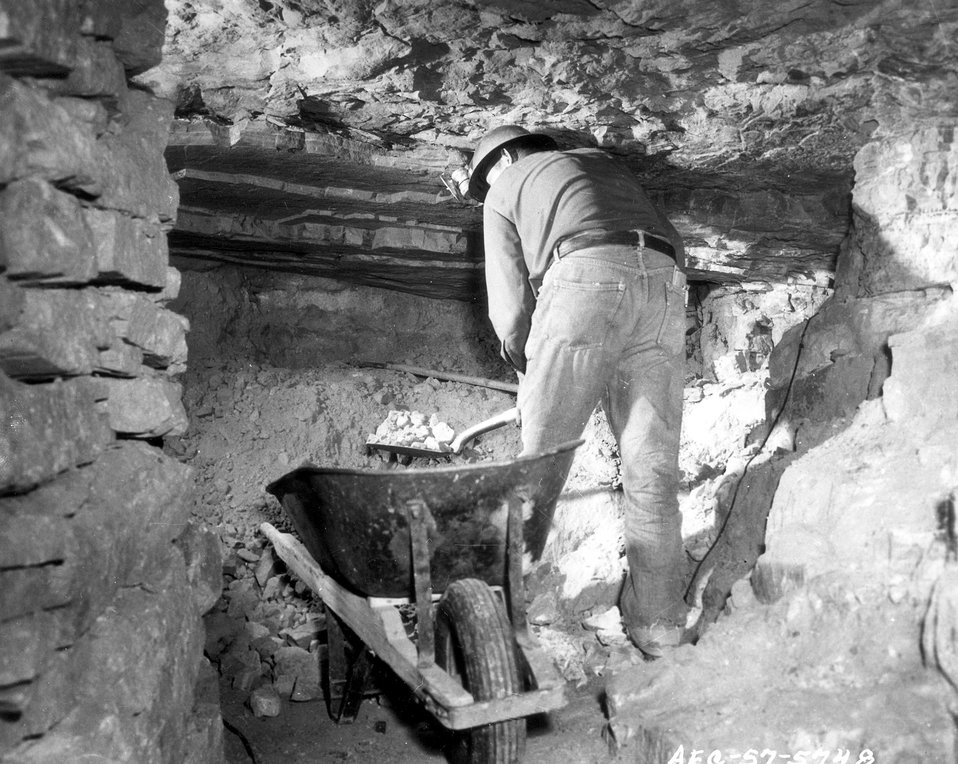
Hand-loading ore into a wheelbarrow in a small uranium mine on the Colorado Plateau. c.